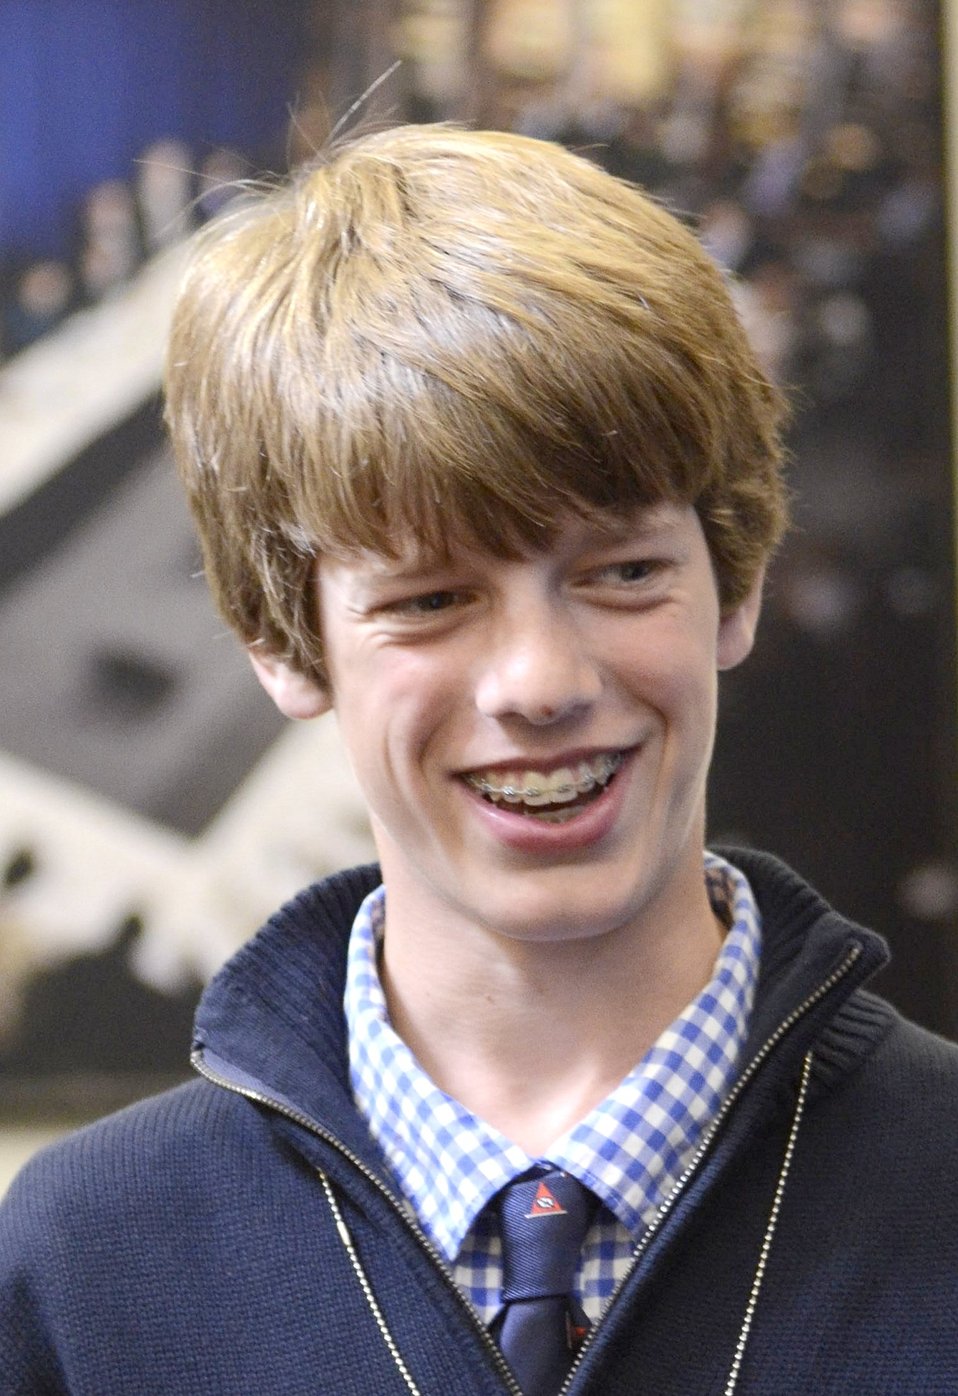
Orren Fox, (aka @happychickens) a teenage chicken/bee keeper, from Boston, talked about learning where his food comes, from raising chickens in his backyard since he was nine. Now he has 32 chickens, 4 ducks and over 200,000 bees. He is the face of Agriculture’s future. He is joined by his father, Henry, during this continuation of a National Conversation on Local and Regional Food projects and how they offer economic opportunities to local farmers, ranchers and food entrepreneurs. The virtual conversation via twitter was from the White House, in Washington, D.C., on Monday, March 5, 2012.